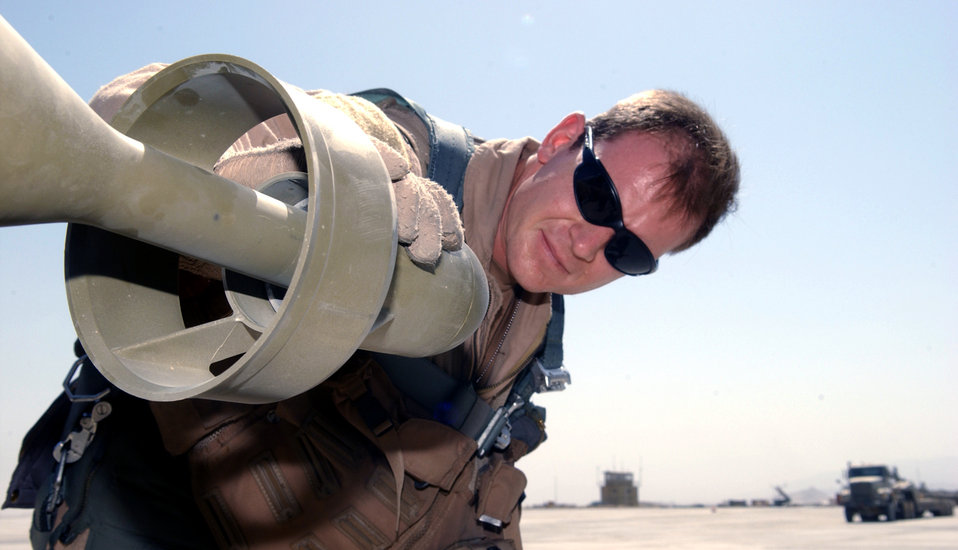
A-10 pilots protect ground forces

BAGRAM AIR BASE, Afghanistan -- Capt. Steve checks the guidance system on a 500-pound laser-guided bomb during a preflight inspection. (His last name is omitted for security reasons.) Captain Steve is an A-10 Thunderbolt II pilot assigned to the 355th Expeditionary Fighter Squadron here.